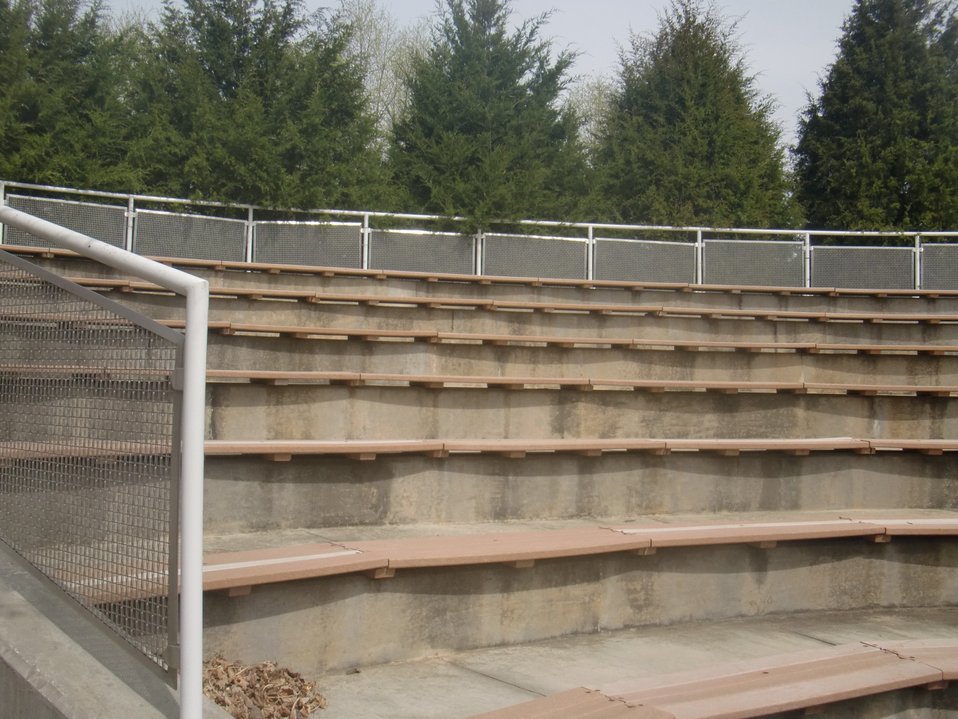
Amphitheater; Location: National Archives at Atlanta, Morrow, GA